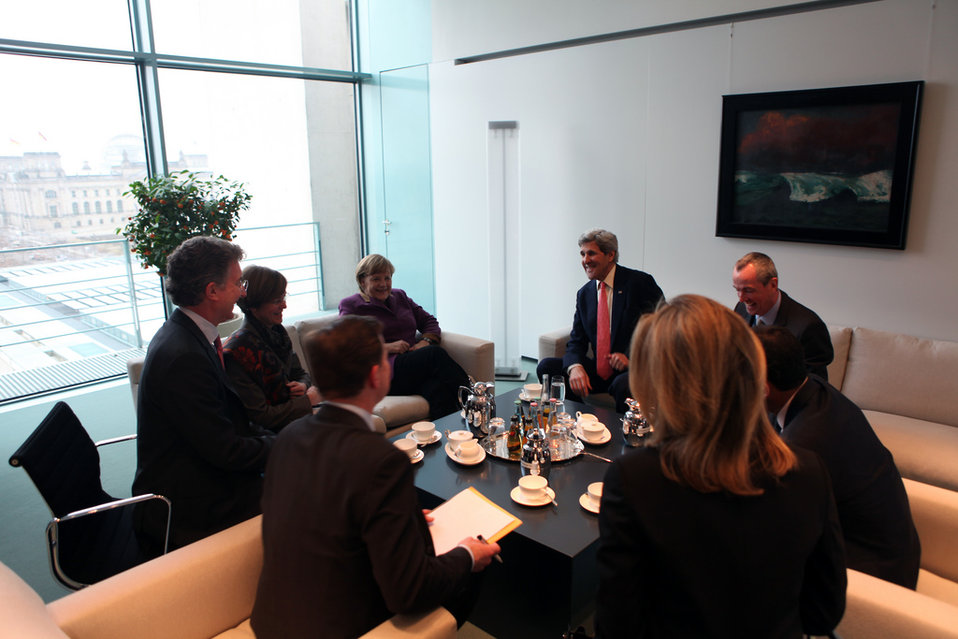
Secretary Kerry and German Chancellor Merkel Sit Down for Coffee

U.S. Secretary of State John Kerry and German Chancellor Angela Merkel sit down for coffee in the Chancellor's office with the Reichstag in the background in Berlin, Germany, February 26, 2013.